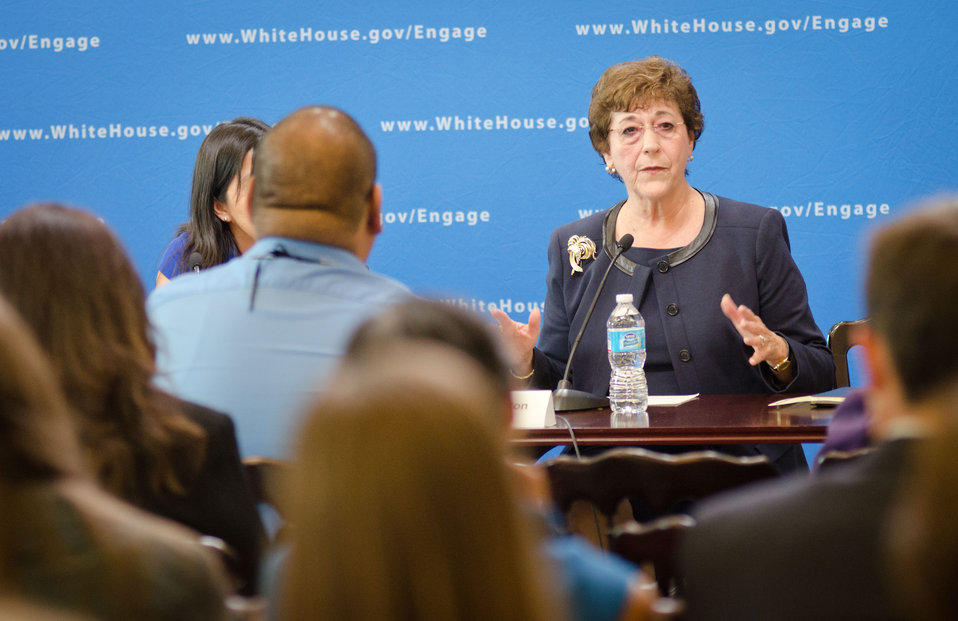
Auburn University (Alabama) College of Human Sciences Dean Dr. June Henton is one of eleven honorees recognized for their efforts to reduce hunger and increase food security in the U.S. and internationally at the White House Champions of Change Strengthening Food Security at Home and Abroad Event held at the White House on Thursday, September 6, 2012, in Washington, D.C.